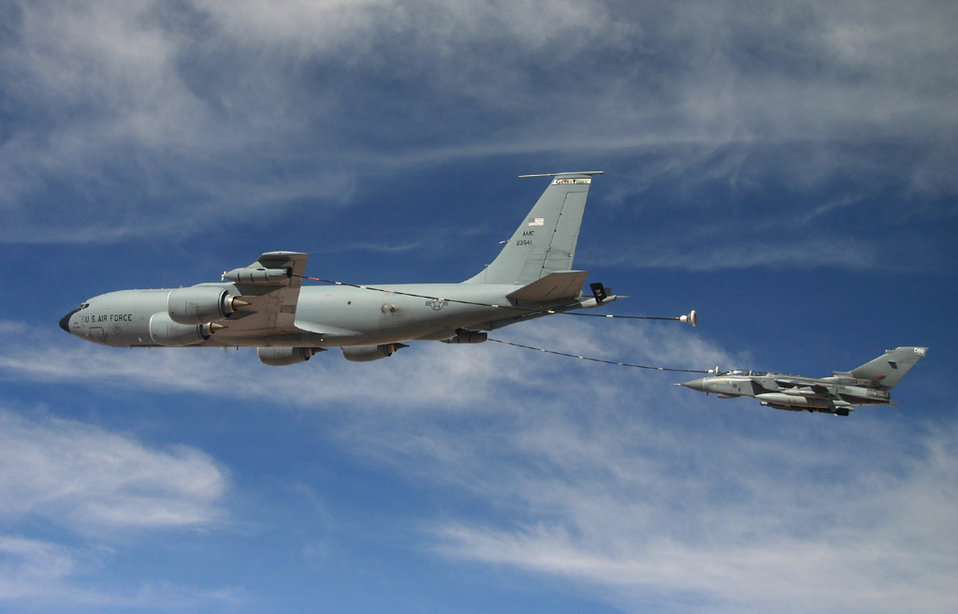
Feb. 28 airpower: Tankers provide air bridge

An Air Force KC-135 Stratotanker from the 340th Expeditionary Air Refueling Squadron refuels a Royal Air Force GR-4 Tornado over Iraq using the multi-point refueling system. With MPRS, Air Force tankers have the versatility to refuel Air Force, Navy and coalition aircraft all in the same mission. On Feb. 26, Air Force, Royal Air Force and French tankers flew 34 sorties and off-loaded almost 2.2 million pounds of fuel.